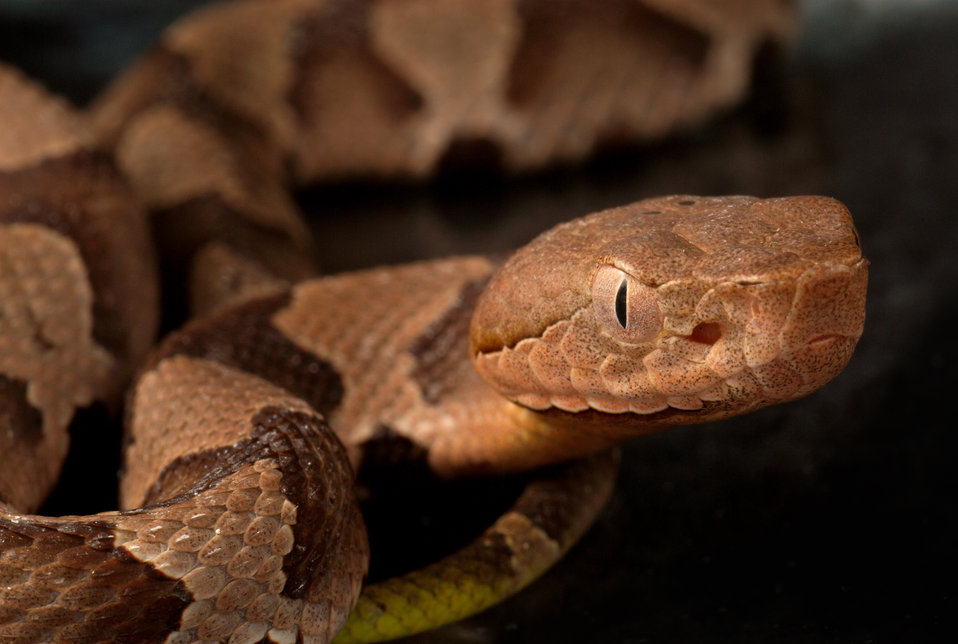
This 2008 photograph depicted a juvenile venomous 'Southern copperhead' snake, Agkistrodon contortrix, as it was coiled in a Decatur, Georgia basement.